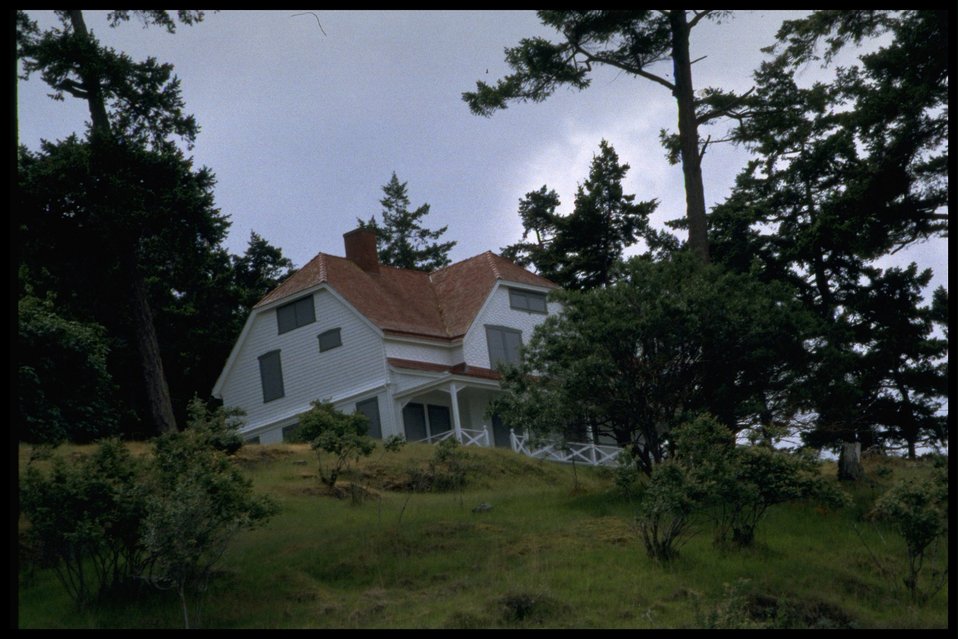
The living quarters at Turn Point.